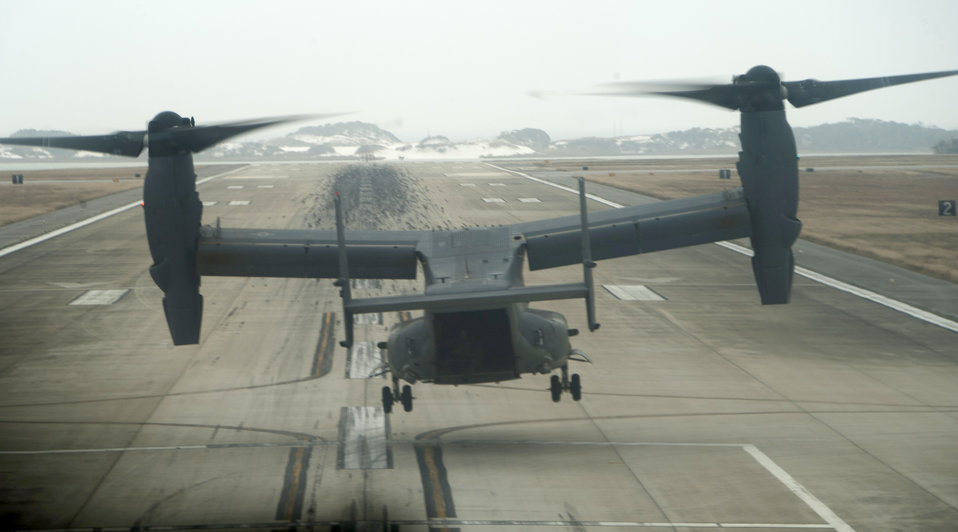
Osprey training mission

Pilots land a CV-22 Osprey during a training mission Feb. 1, 2011, at Hurlburt Field, Fla.